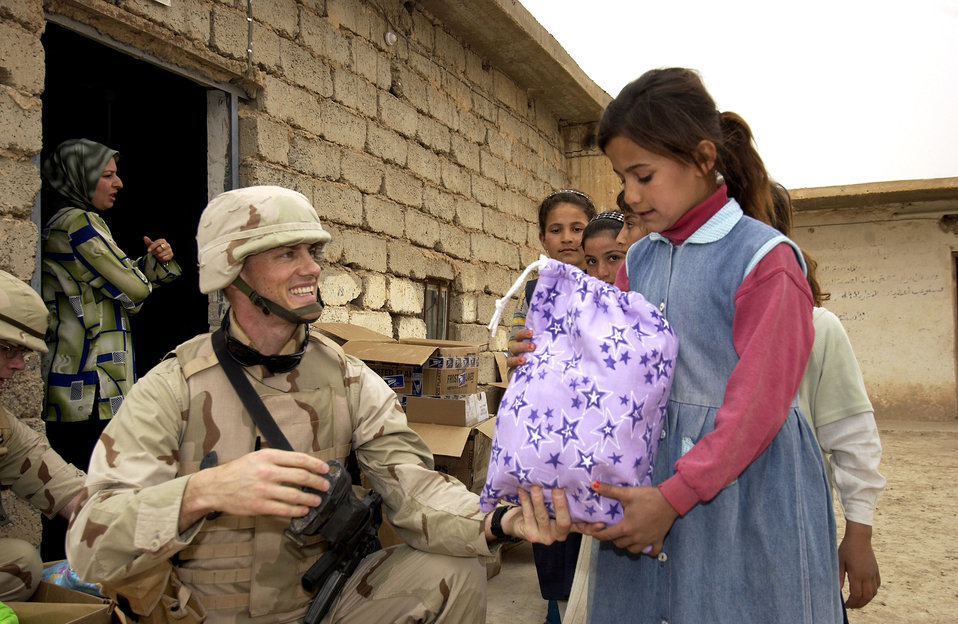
From children for children

AL ANWAR, Iraq -- Maj. Keith Peloquin hands out school supplies to children here. The supplies were provided by a school in Tampa, Fla., through fund-raising events by the children. Major Peloquin is assigned to the 332nd Expeditionary Wing at Balad Air Base.